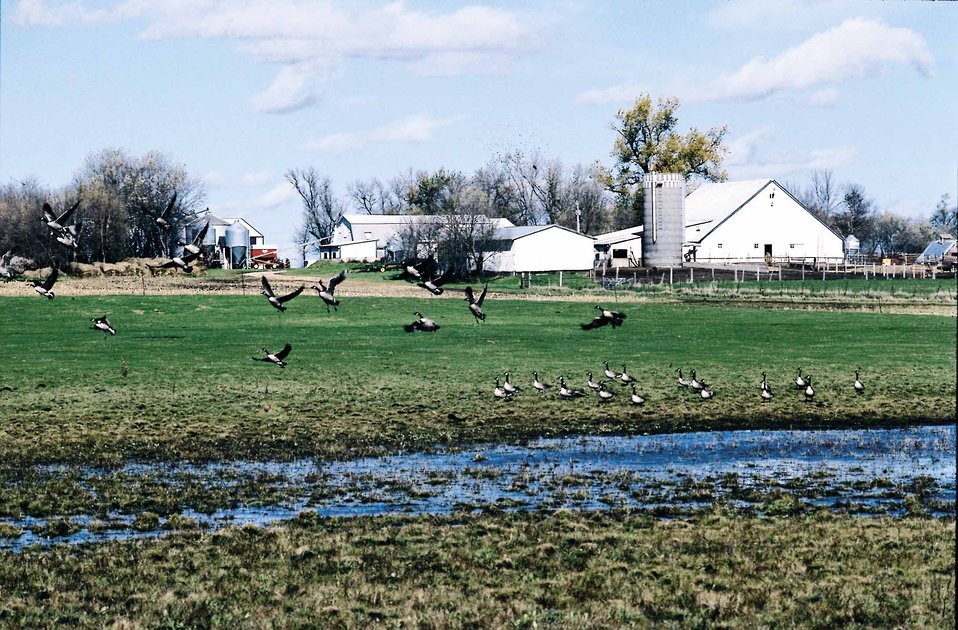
Wetland in northern Iowa.